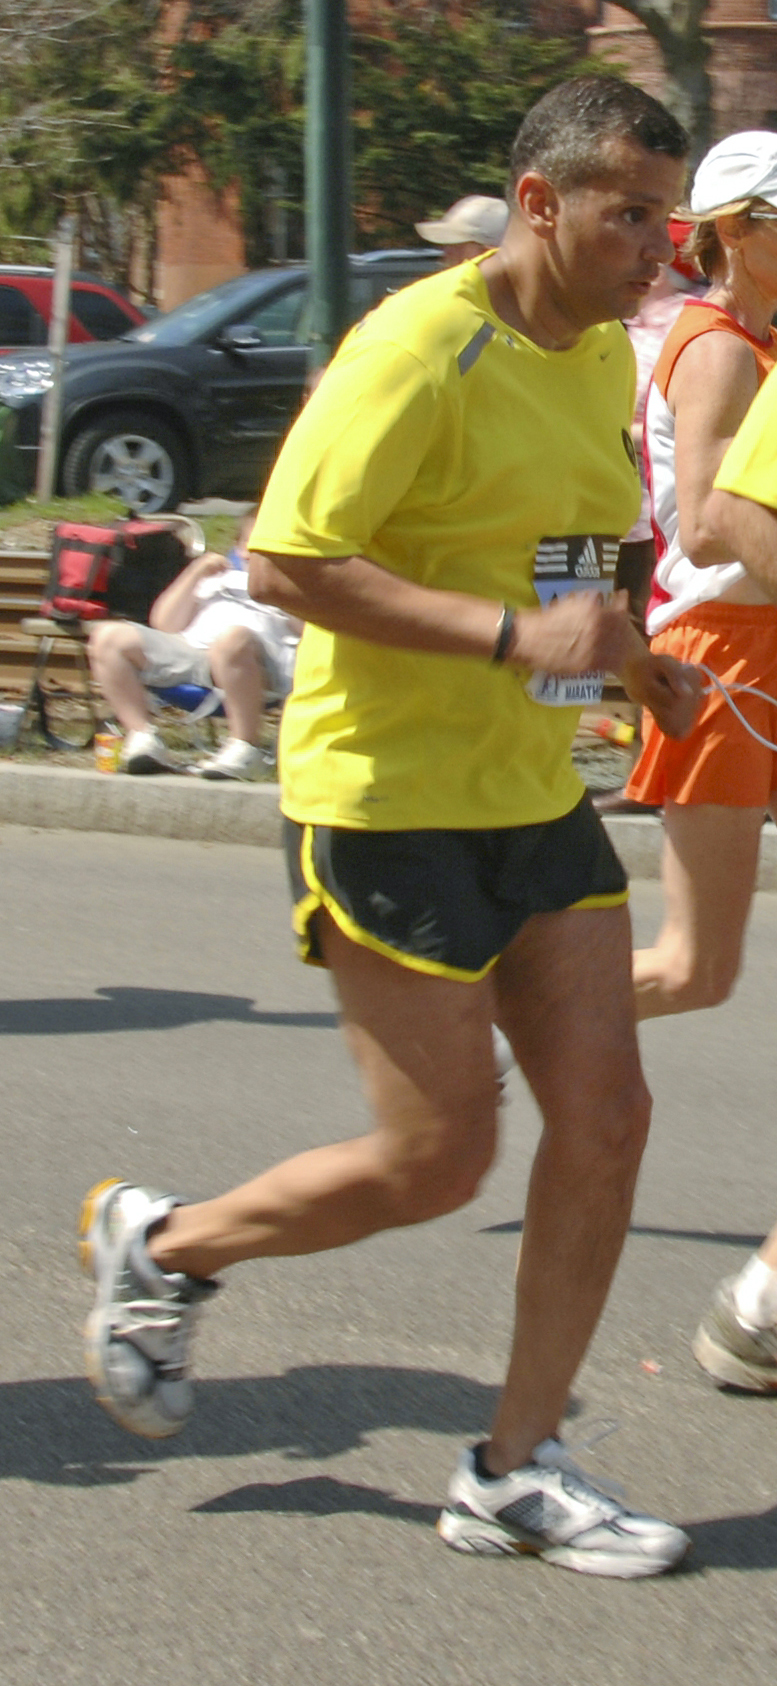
Special Forces soldier not your average USAF marathoner

Army Capt. Ivan Castro runs tethered in the 112th Boston Marathon April 21. He plans to participate in the U.S. Air Force Marathon Sept. 20.